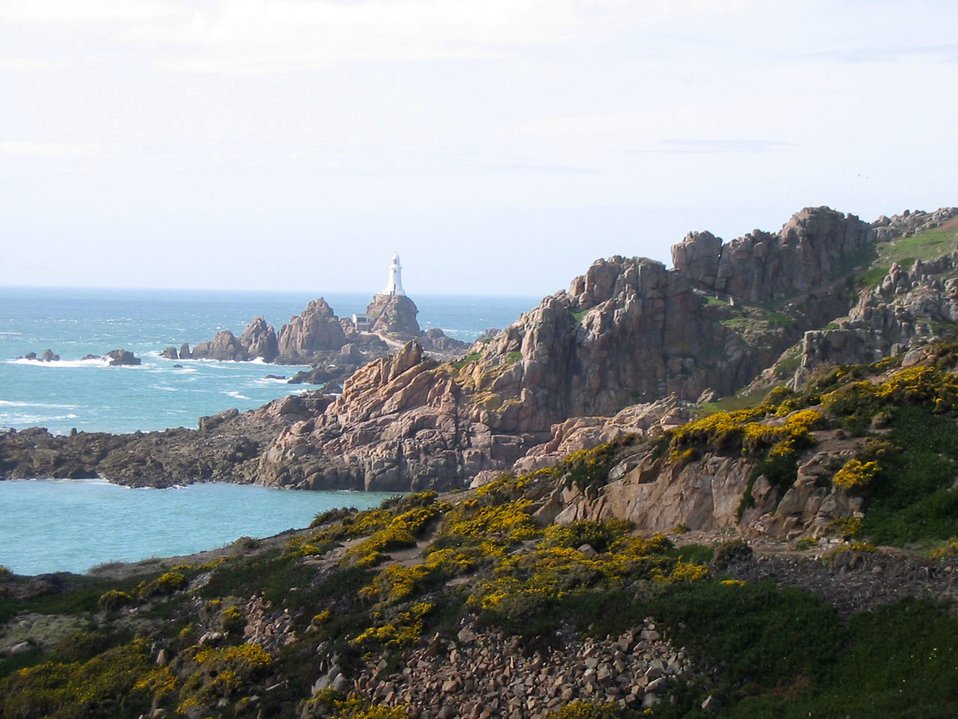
La corbiere on in distance.